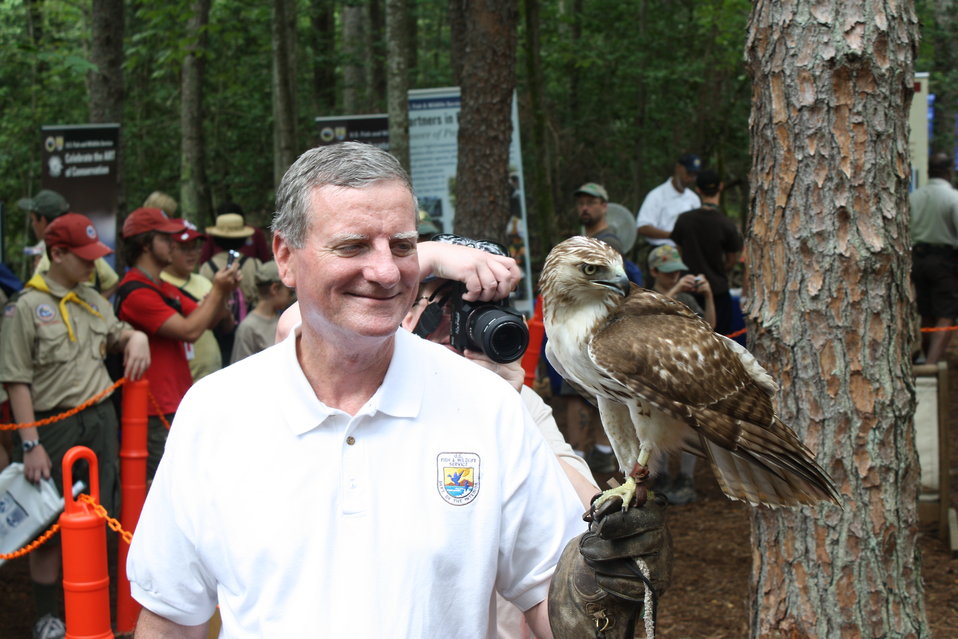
Boy Scout Jamboree 2010